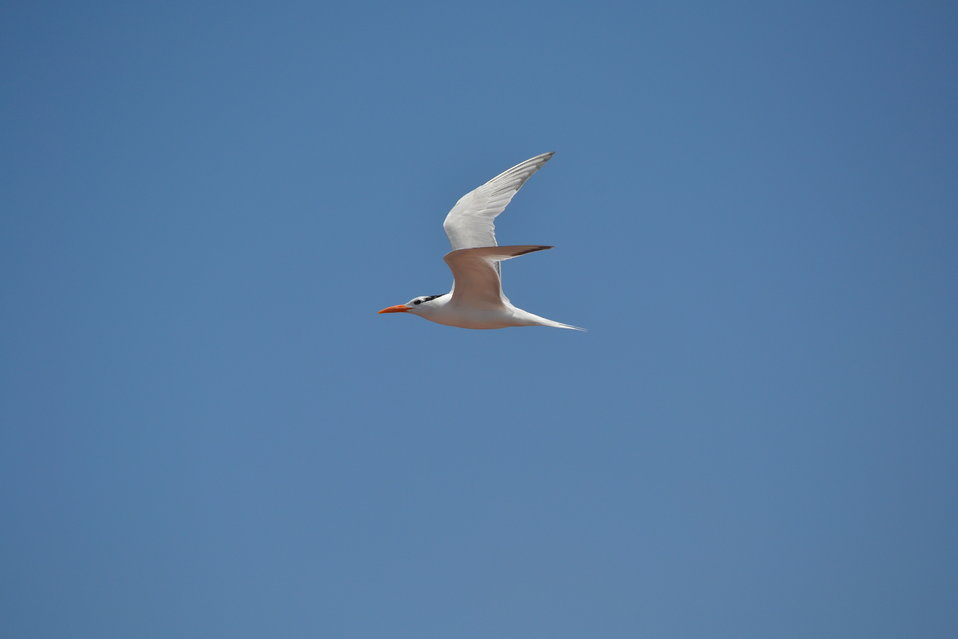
Adult non-breeding Royal Tern (Thalasseus maximus)

Common on open coastal waters, especially on inlets of bays such as the south San Diego Bay